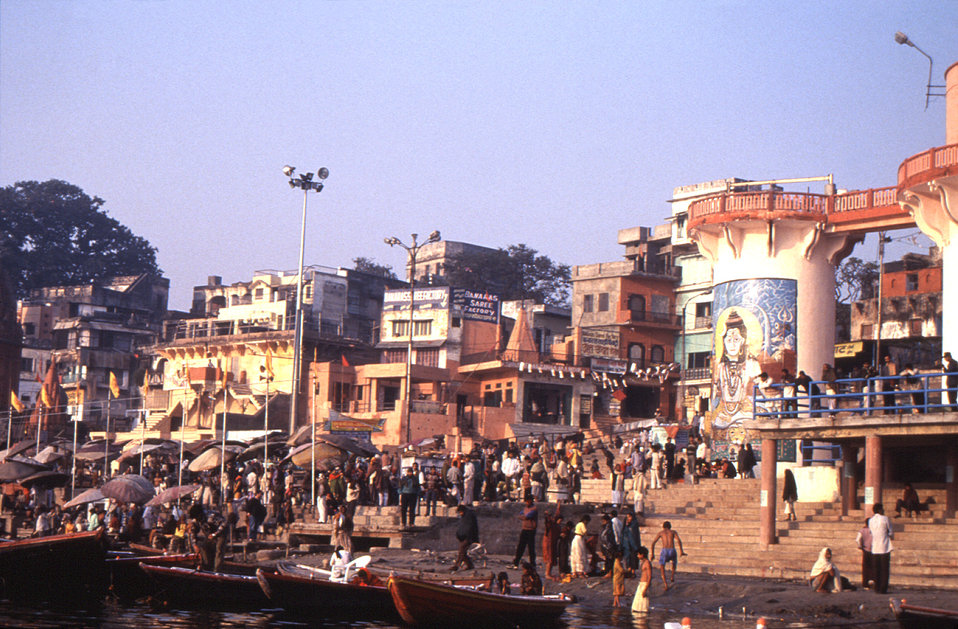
The Indian city of Varanasi is situated on the banks of the sacred Ganges River, and is one of the holiest places in India. On a daily basis, people frequent the steps, or ghats along the Ganges River. This image, captured in 2000, depicted a large number of people who'd come to the holy river's banks in order to bath in its spiritually cleansing waters.